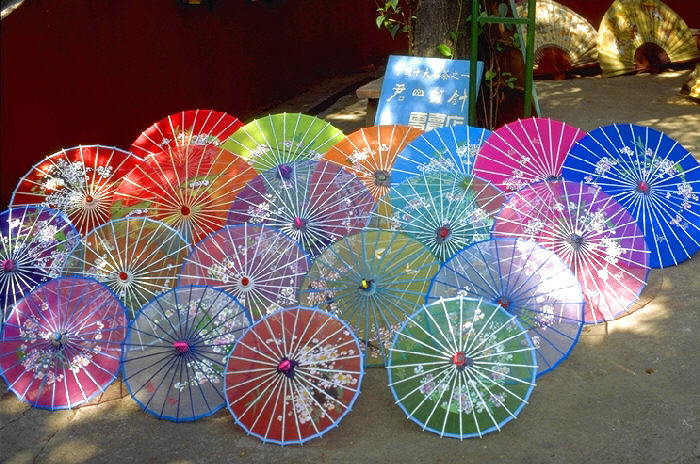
Parasols, Peoples Republic of China.